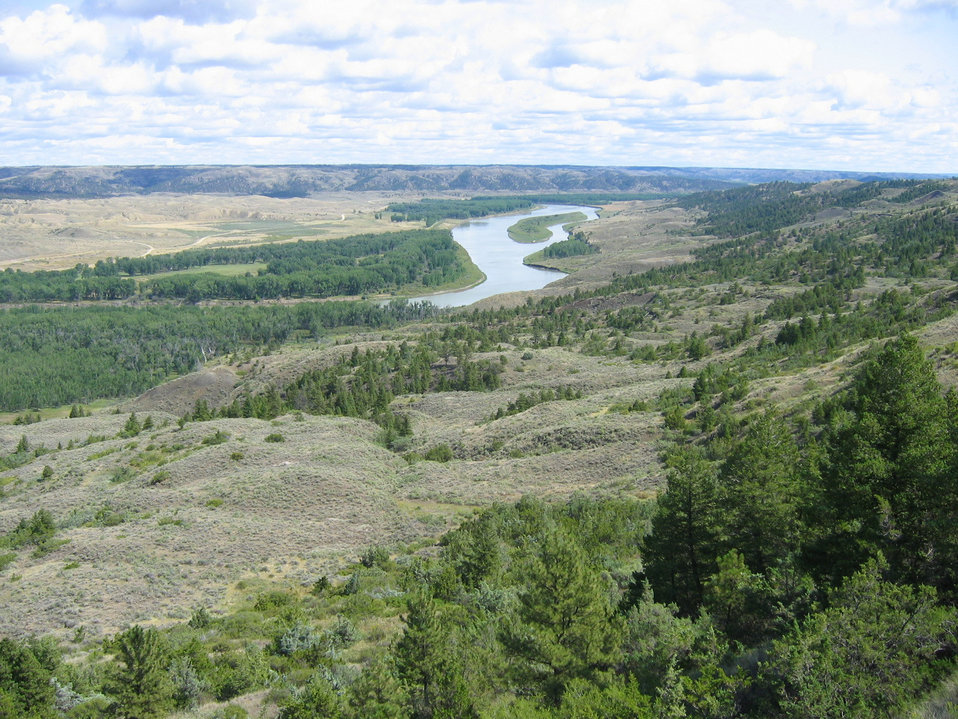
Missouri River

View of the Missouri River Breaks on Charles M. Russell NWR in Montana.